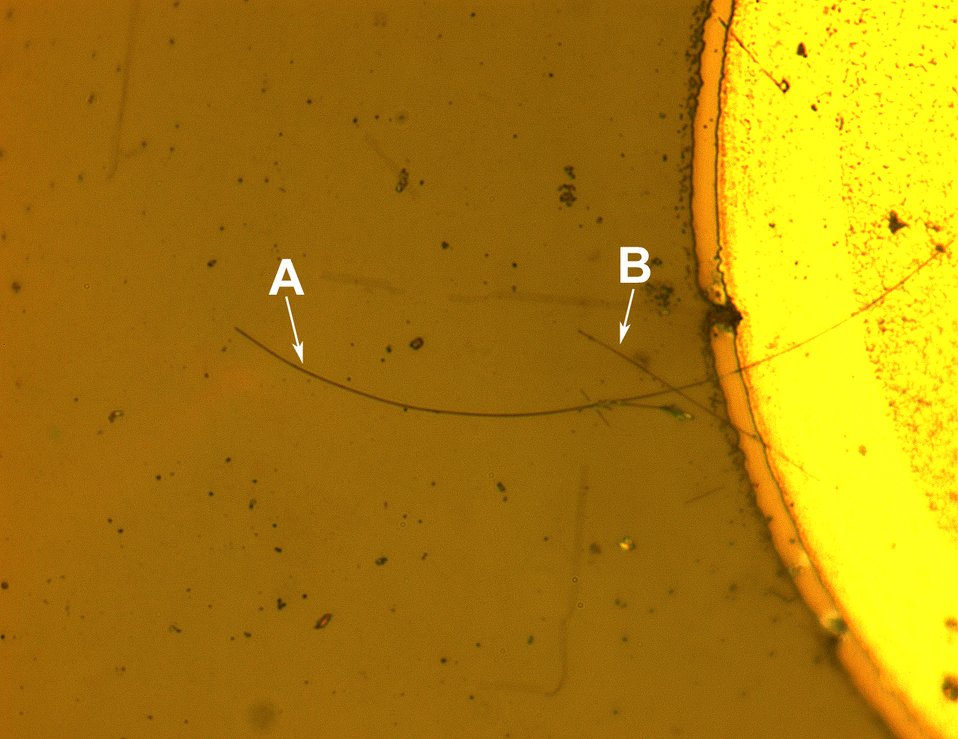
New Fabrication Technique Yields Nanoscale UV LEDs

Micrograph of a complete nanowire LED with the end contact. The long nanowire (A) is about 110 micrometers long, a shorter nanowire (B) crosses it. The bright circular section is the metal post from which the nanowires are aligned.